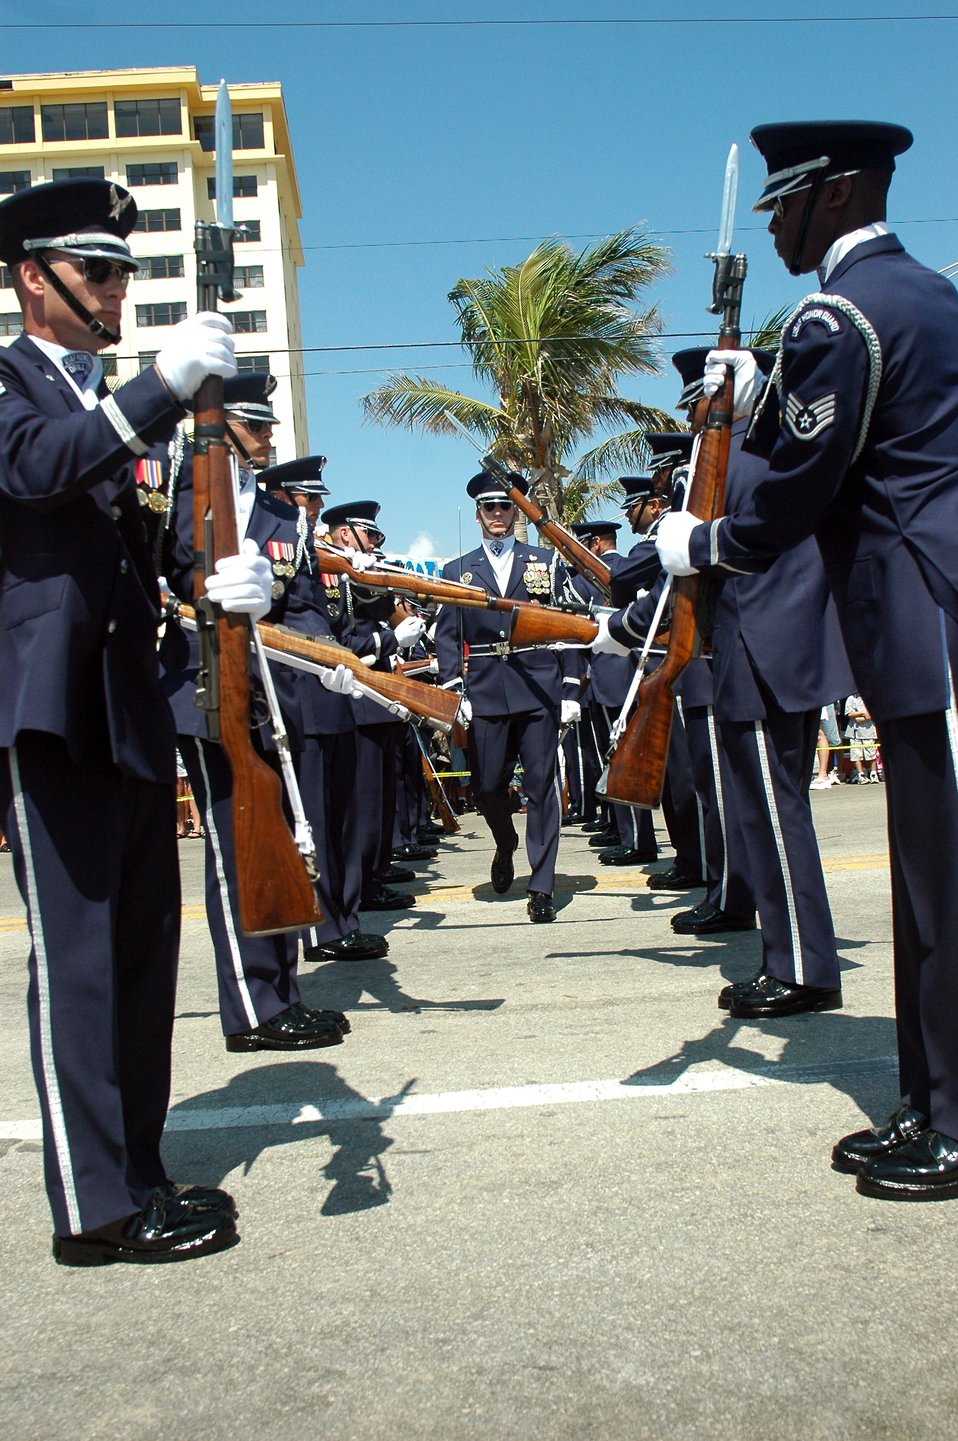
Air Force Honor Guard performs at 2006 Air and Sea Show

Master Sgt. Jacob Pulling, drill team commander, walks through a gauntlet of spinning rifles during a performance at the 2006 Air and Sea Show May 4 to 7 in Fort Lauderdale, Fla.